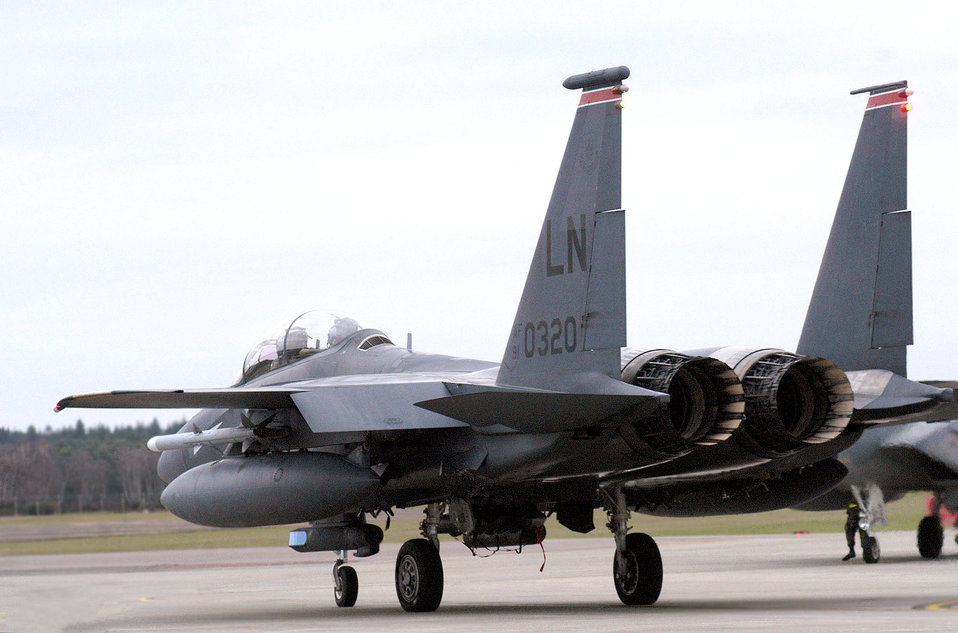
F-15E crew uses new targeting pod

ROYAL AIR FORCE LAKENHEATH, England -- A 494th Fighter Squadron F-15E Strike Eagle crew awaits clearance to take off here Jan. 7. The aircraft was equipped with the new Sniper Advanced Targeting Pod. The flight also marked the first time an F-15E carried a GBU-38 Joint Direct Attack Munition.